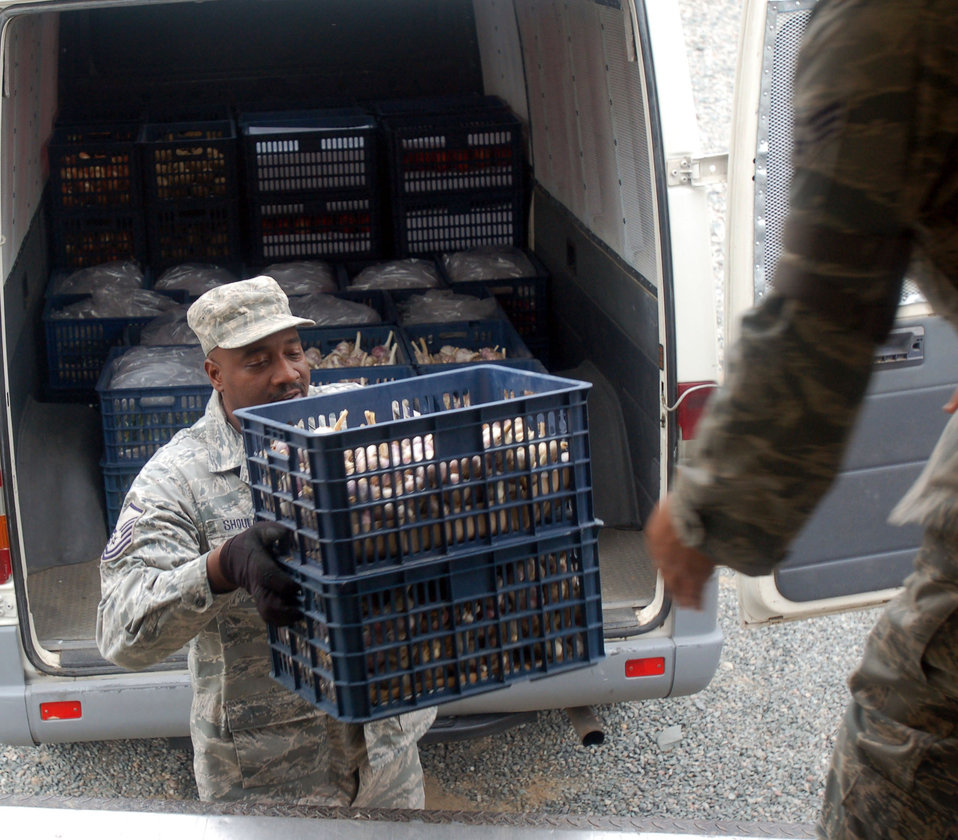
Airmen take steps to boost Kyrgyz economy

Master Sgt. John Shoulars passes crates of garlic during the delivery of the first set of local farm products Oct. 27, 2009, to the Transit Center at Manas, Kyrgyzstan. The delivery, which consisted of fresh fruits, vegetables and bakery products, was part of the efforts Airmen here are making to support more local businesses. Sergeant Shoulars is the sustainment flight chief for the 376th Expeditionary Force Support Squadron.